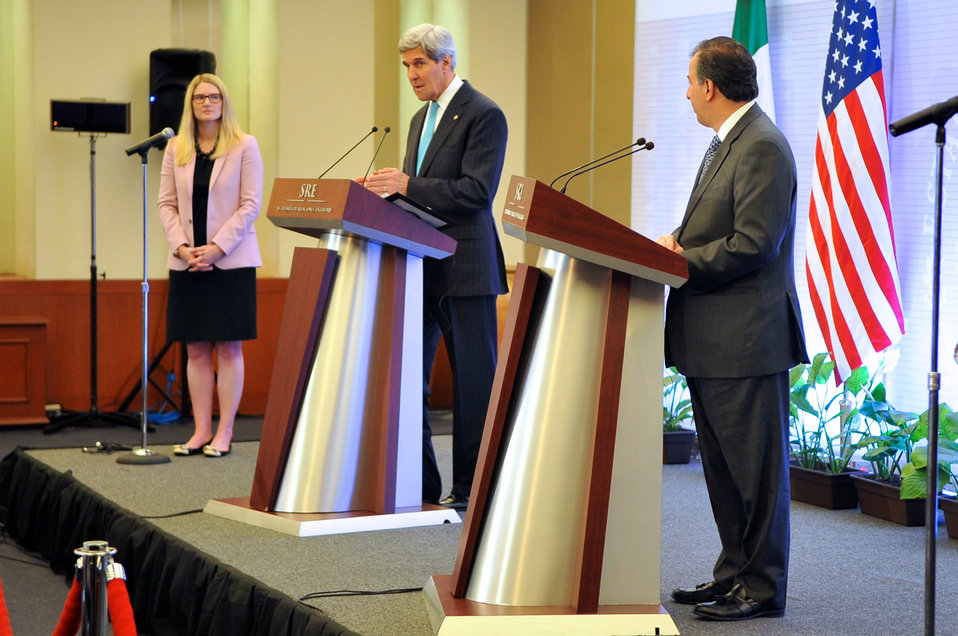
Secretary Kerry Addresses U.S., Mexican Reporters at News Conference

U.S. Secretary of State John Kerry, flanked by Deputy Spokesperson Marie Harf, speaks during a joint news conference with Mexican Foreign Secretary José Antonio Meade following a series of meetings in Mexico City on May 21, 2014.